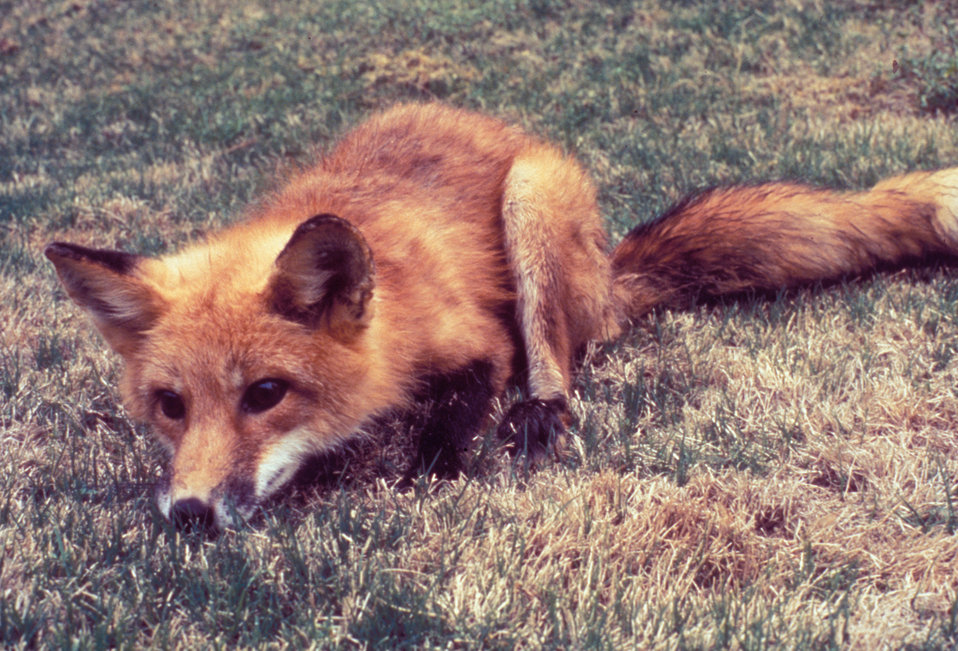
Foxes too, may be possible vectors of the rabies virus, transmitting it to humans and other animals.